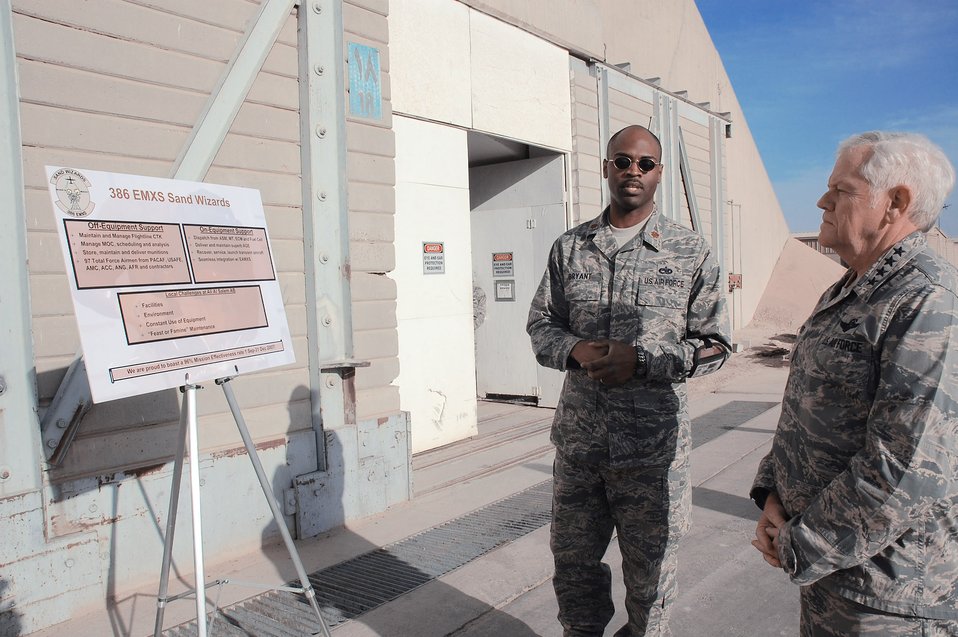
AMC commander visits Airmen in Southwest Asia

Gen. Arthur J. Lichte receives a mission brief from Maj. Emille Bryant Jan. 7 at a Southwest Asia air base. General Lichte, commander of Air Mobility Command, was making his first visit downrange since taking command in September. Major Bryant is the 386th Expeditionary Maintenance Squadron commander.